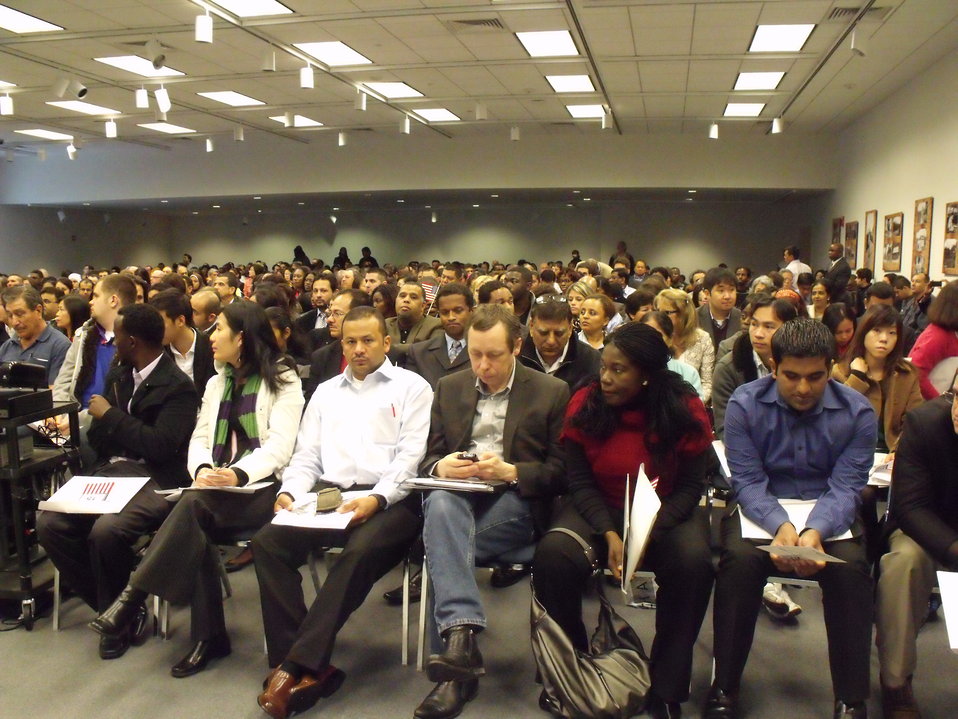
Naturalization Ceremony